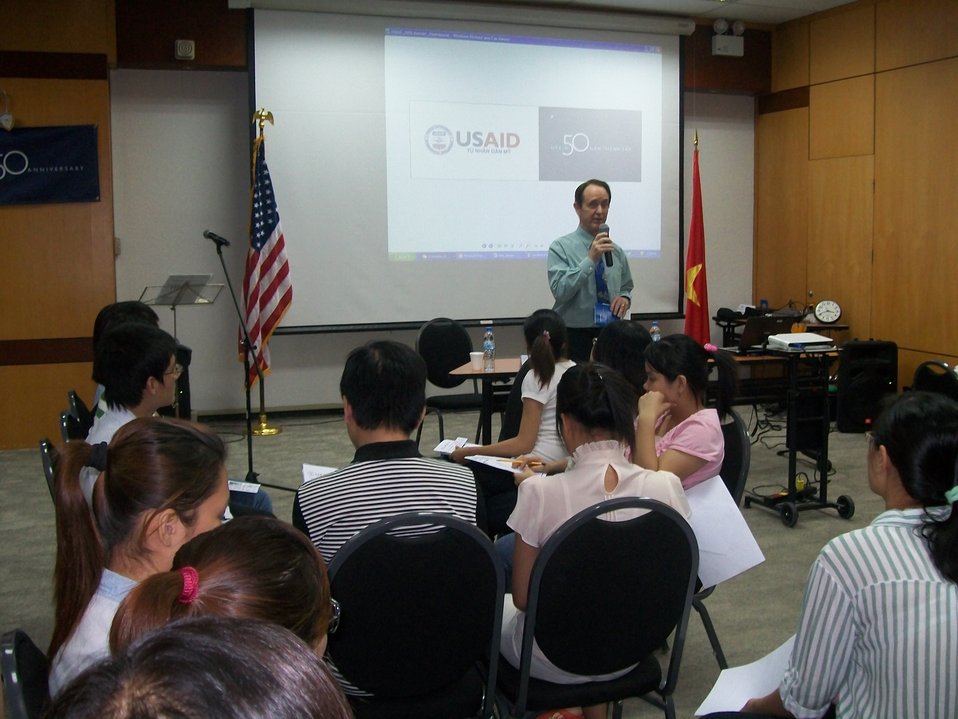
American Center and USAID host Debate Club on Higher Education

USAID/Vietnam Mission Director Francis Donovan address students and discusses the USAID-supported Higher Engineering Education Alliance Program with Arizona State University, Intel, and others.